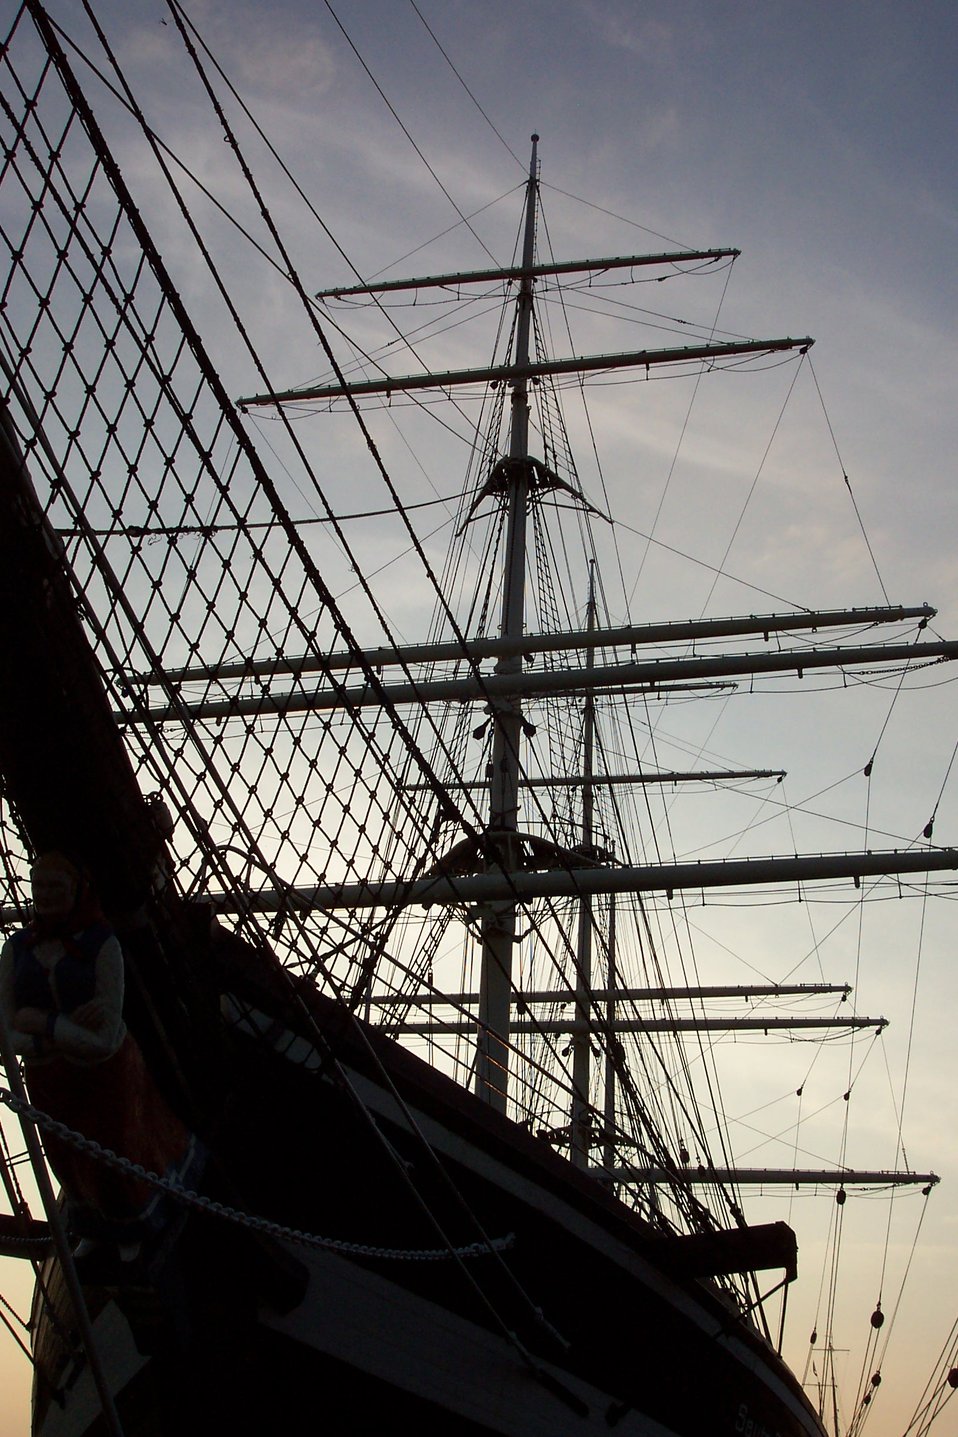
A sailing ship silhouetted in the sunset at the Bremerhaven Maritime Museum.